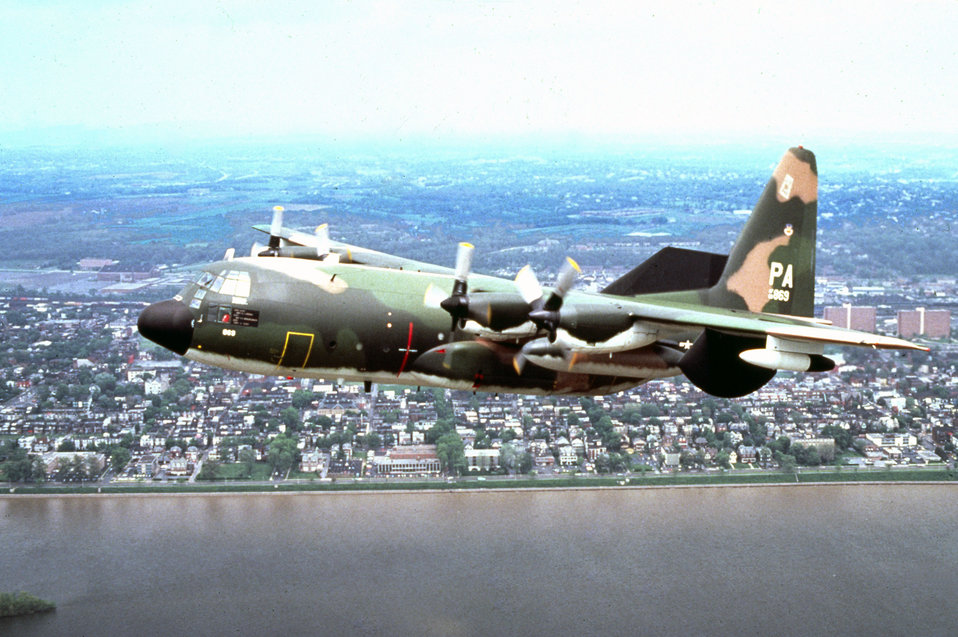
EC-130